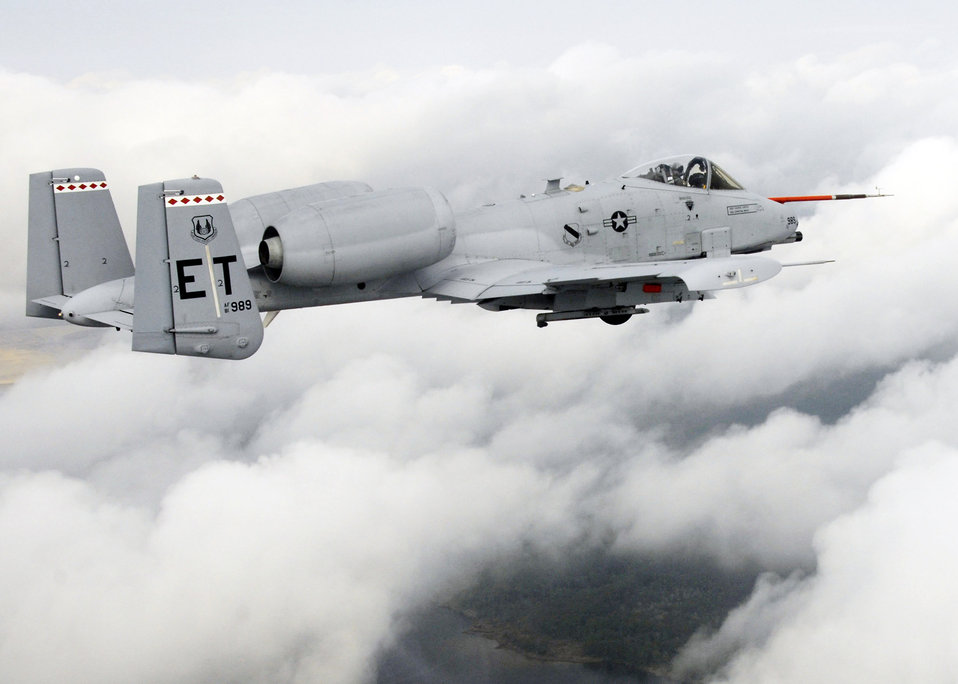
Air Force scientists test, develop bio jet fuels

An A-10C Thunderbolt II from Eglin Air Force Base, Fla., flies along the coast of Florida March 25, 2010, during the first flight of an aircraft powered solely by a biomass-derived jet fuel blend. The A-10 was fueled with a 50/50 blend of Hydrotreated Renewable Jet and JP-8.